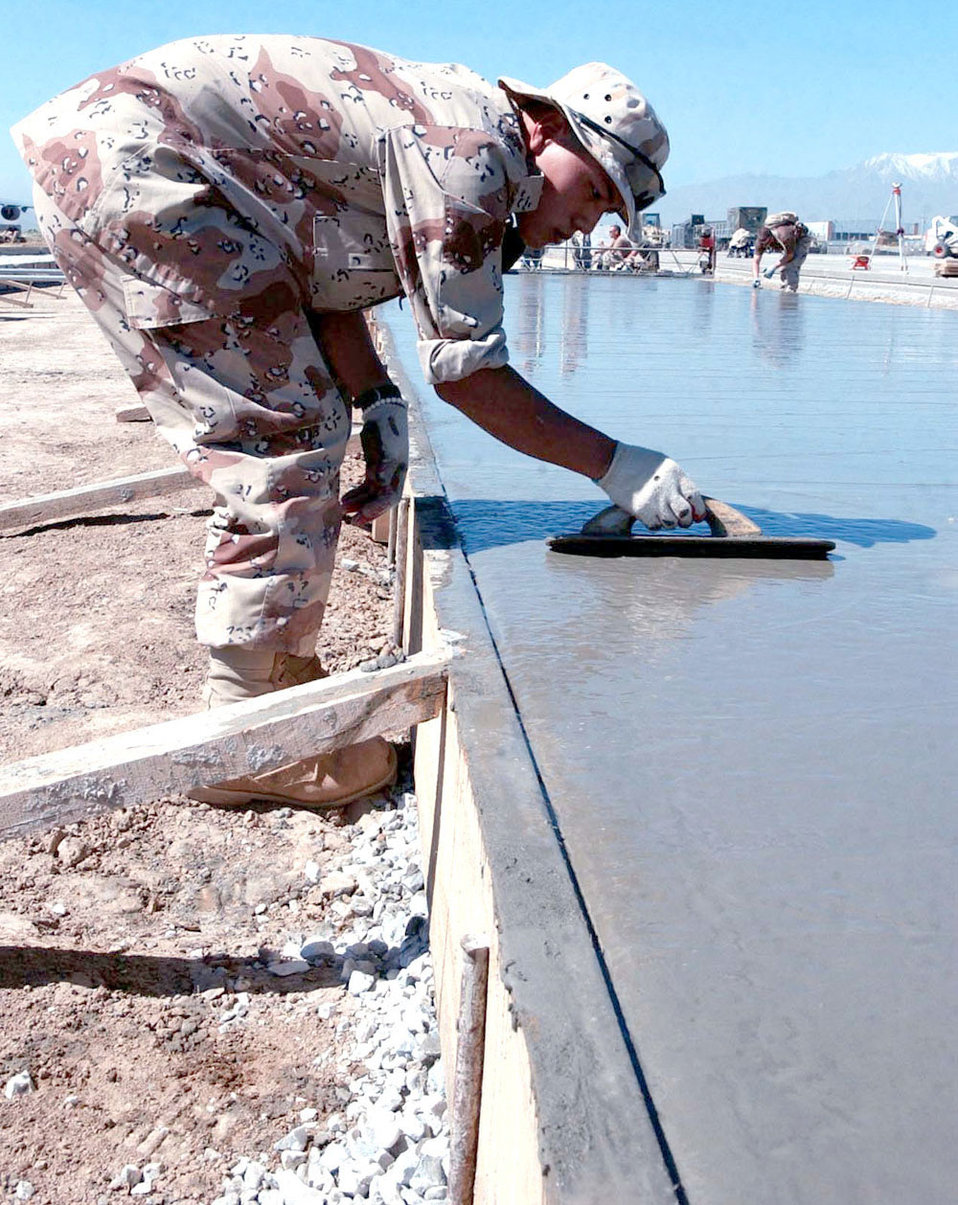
'Cementing' friendships

BAGRAM AIR BASE, Afghanistan -- South Korean army Pfc. Yi Dong Gon puts the finishing touches on concrete on the flightline here. A South Korean-American engineering project expanded the flightline here by about 76,000 square feet. Private Gon is an engineer with the 100th Korean Engineer Corps.